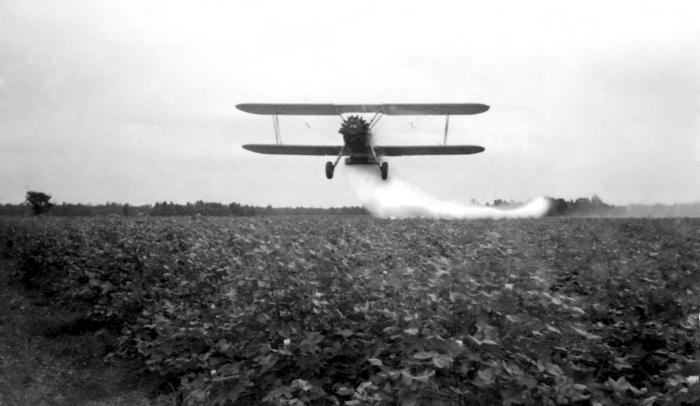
This 1947 historical photograph was provided by the Center for Disease Control's (CDC), National Institute for Occupational Safety and Health (NIOSH), and depicted a crop-dusting biplane dispersing pesticide spray over an unidentified farm crop. This image had been 'retouched' for publication, in order to emphasize the spray plume. Activities such as this need stringent oversight by a regulating body such as NIOSH, which would make the health and welfare of such workers a paramount concern. Though the spray was dispersed from the rear of the plane, the pilot and those on the ground were still susceptible to toxic effects brought on through contact with the pesticide. Contact with the chemicals could also have occurred through the act of pesticide formulation prior to spraying.